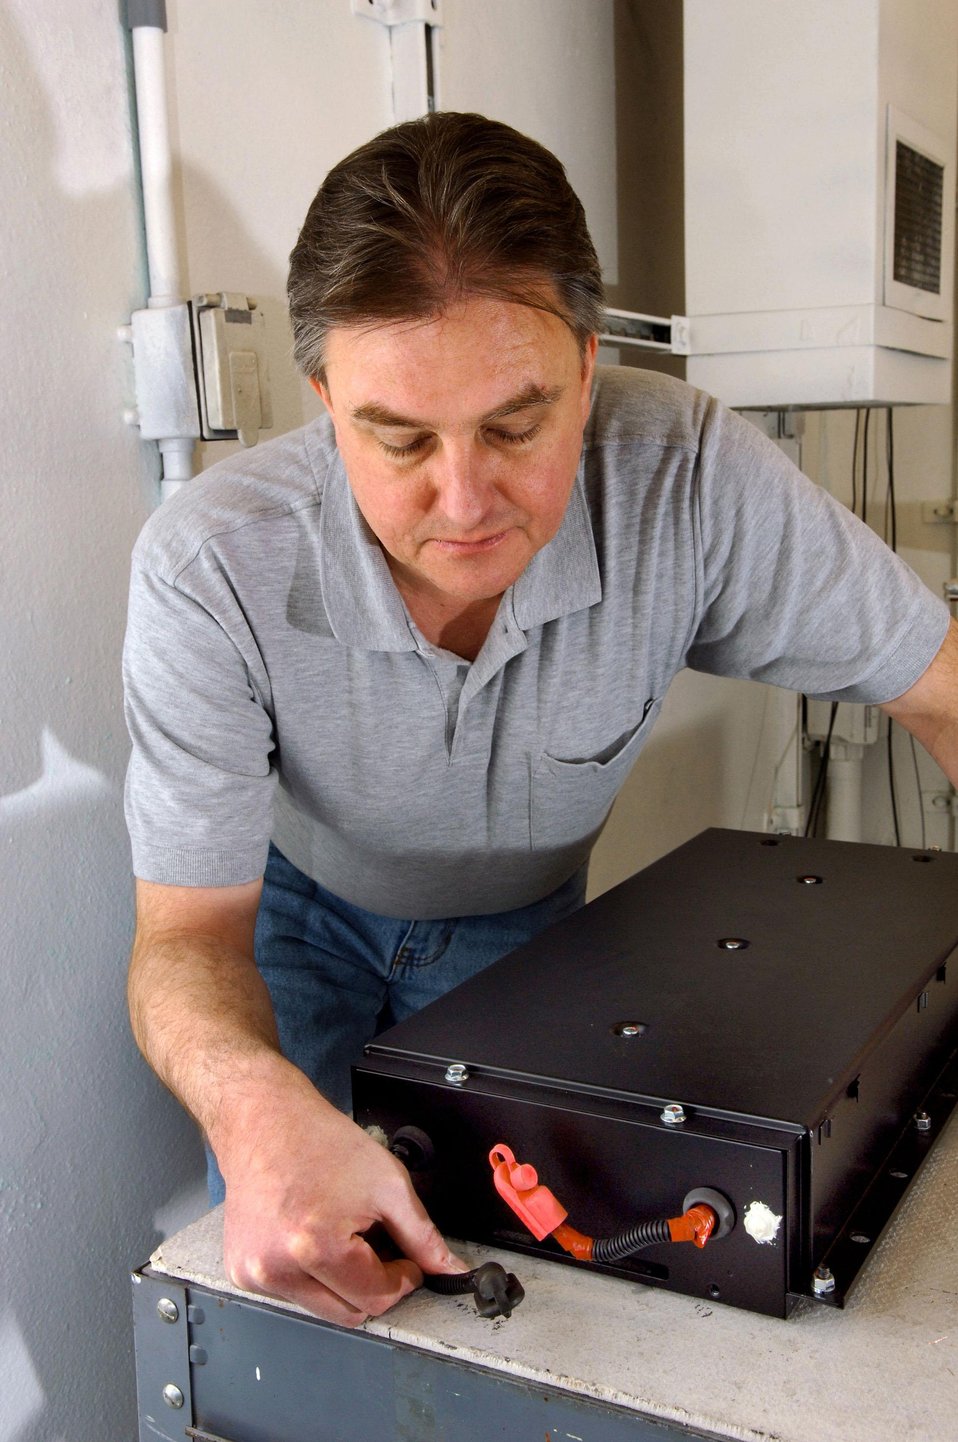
SANDIA NATIONAL LABORATORY RESEARCHER EXAMINES A LITHIUM-ION BATTERY THAT MAY BE PUT IN A HYBRID CAR IN THE FUTURE.

AS PART OF THE FREEDOMCAR PROGRAM, THESE NEW LITHIUM-ION BATTERIES LAST LONGER, SAFER, AND IT HAS THE POTENTIAL TO BE ONE OF THE LOWEST-COST BATTERY SYSTEMS. THE FREEDOMCAR PROGRAM IS A JOINT PROGRAM WITH SANDIA, ARGONNE, LAWRENCE BERKELEY, IDAHO AND BROOKHAVEN NATIONAL LABORATORIES.